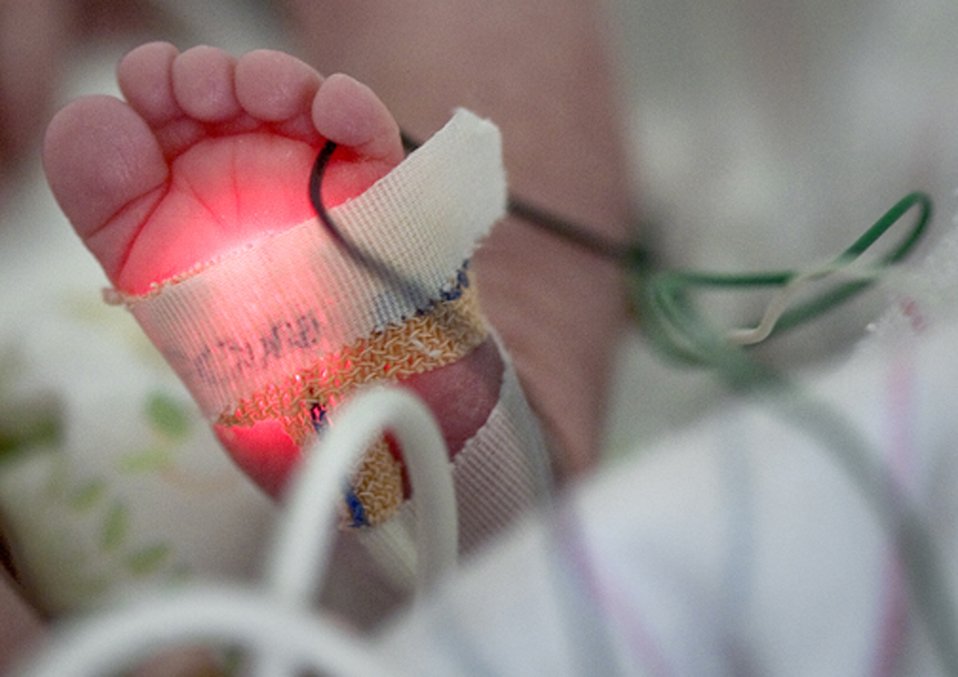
Keep your heart light shining

The monitor for this newborn child shines brightly in the Neonatal Intensive Care Unit, or NICU, at Wilford Hall Medical Center in San Antonio Dec. 12, 2009. The NICU is for premature babies or ones that require specialized care.